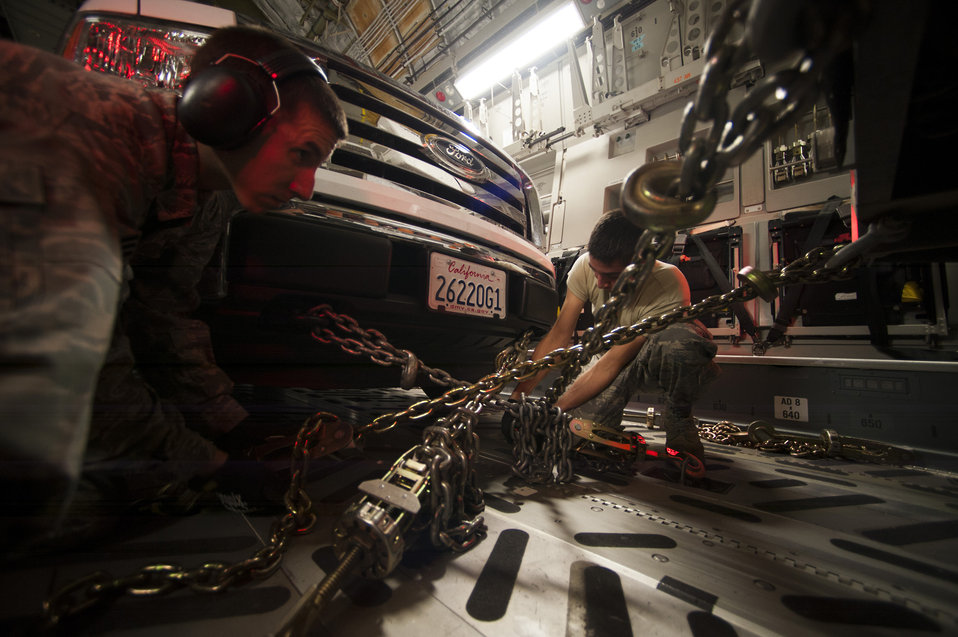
Hurricane Sandy relief

Senior Airman David Derbin and Senior Airman Raul Martir chain a utility truck bound for New York to the floor of a C-17 Globemaster III at March Air Reserve Base, Calif., Nov. 1, 2012. Derbin and Martir are with the 50th Aerial Port Squadron.